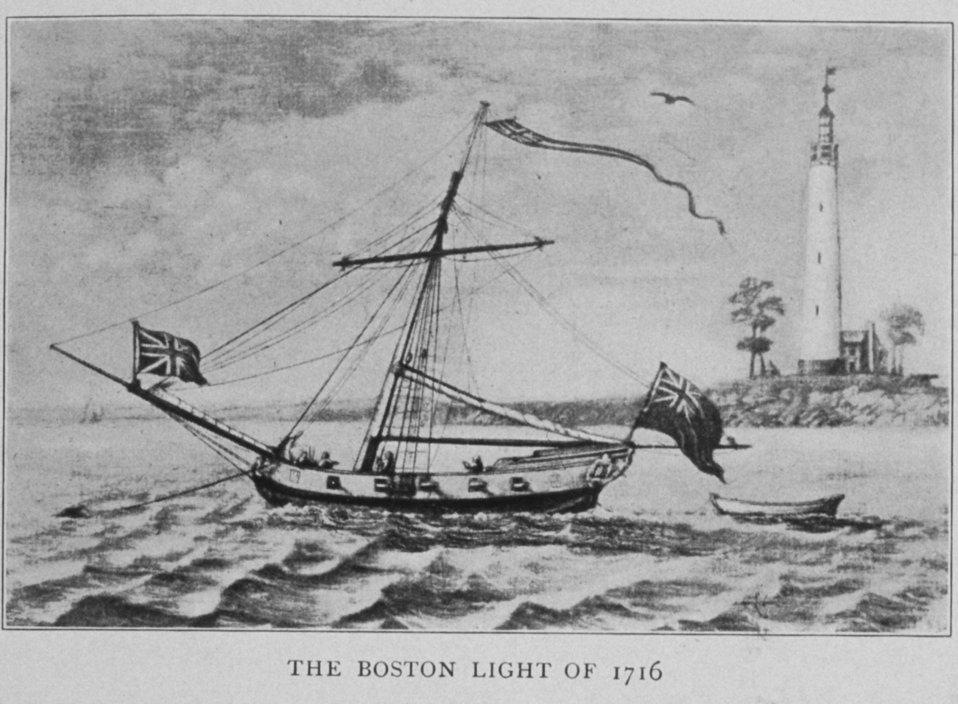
The Boston Light of 1716. In: 'Lighthouses and Lightships of the United States' by George R. Putnam, p. 6, 1917. Houghton Mifflin and Company, Boston. Library Call No. 527.7 P98.